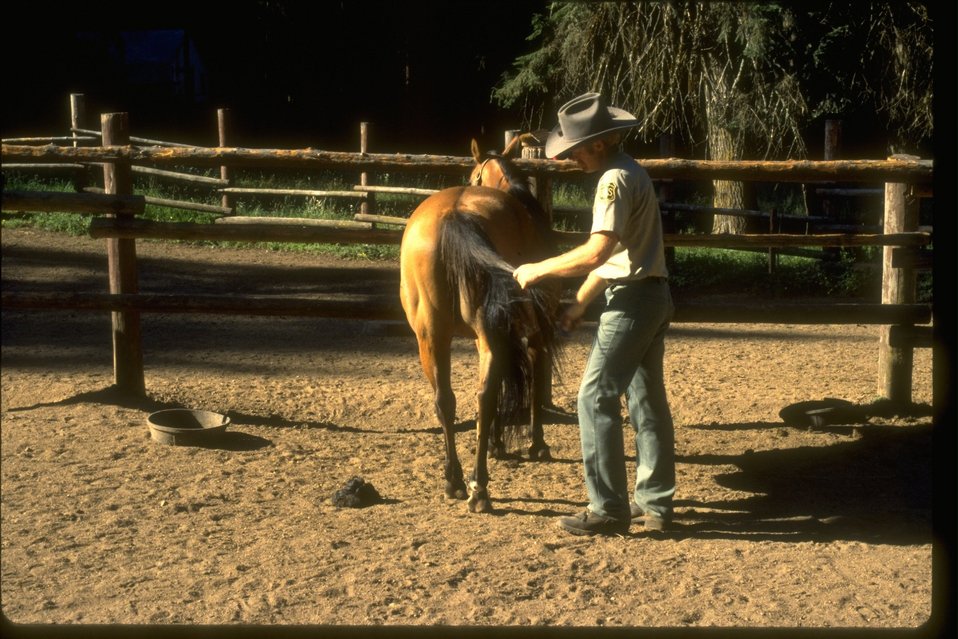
Forest Service employee brushing spotted knapweed weed from a horses tail in the Sellway Bitteroot wilderness of Idaho.